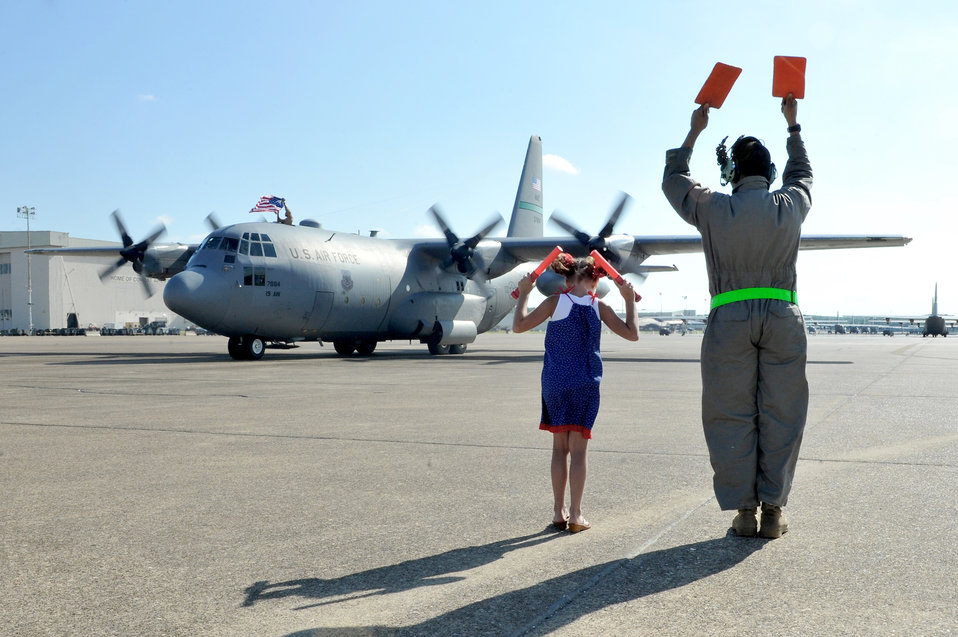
Returning home

Kinsely Carlin helps marshal in a C-130 Hercules carrying her father, Staff Sgt. John Carlin, May 13, 2001, at Little Rock Air Force Base, Ark. Sergeant Carlin is assigned to the 61st Airlift Squadron.